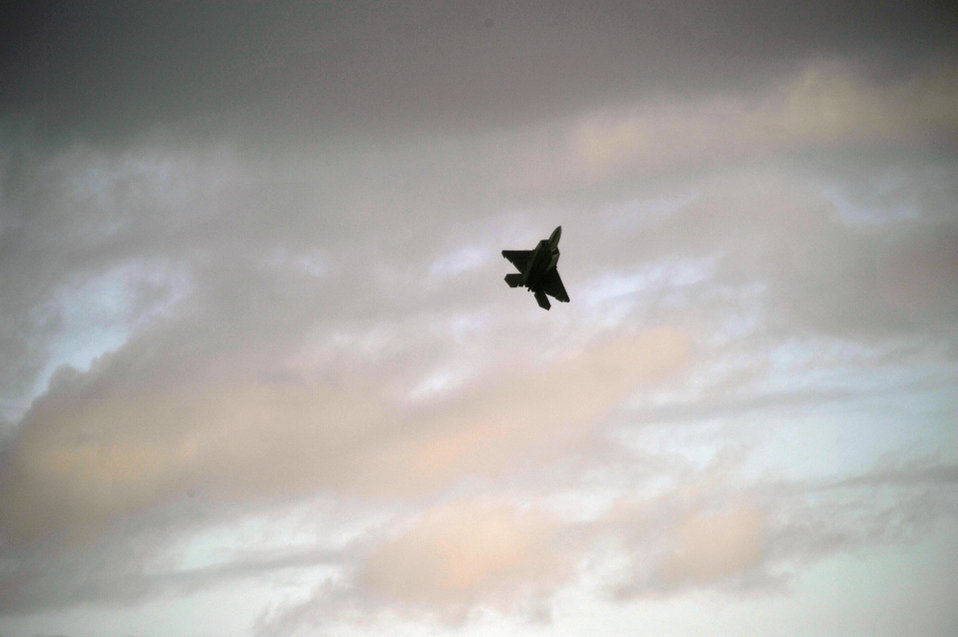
F-22 Raptor rolls out in Hawaii

An F-22 Raptor is put through a demonstration display July 9, 2010, above the water surrounding the island of Oahu in Kapolei, Hawaii, as part of the dedication celebration of the F-22 becoming the new aircraft belonging to Joint Base Pearl Harbor-Hickam.